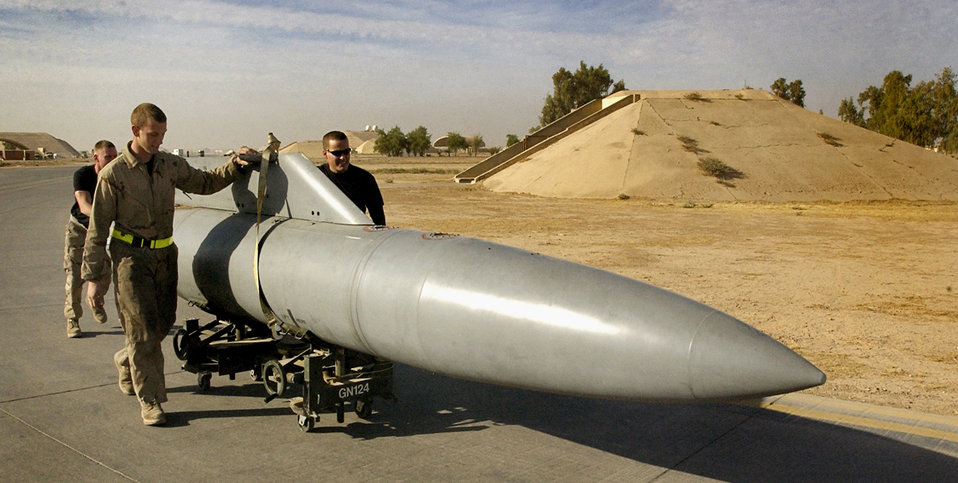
Falcon fixers

BALAD AIR BASE, Iraq -- (left to right) Staff Sgt. Duke Wilhelm, Airman 1st Class Andrew Servais and Staff Sgt. Rudy Stevens roll a fuel tank to an F-16 Fighting Falcon ready for a mission. The Airmen are with the 332nd Expeditionary Aircraft Maintenance Squadron.